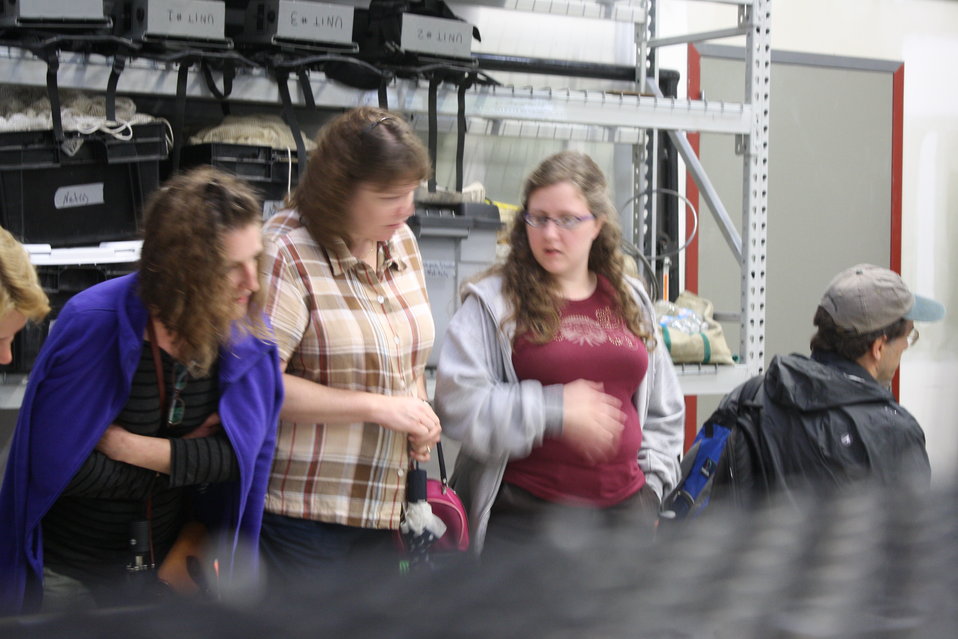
Nashua National Fish Hatchery welcomes regional office employees

Viewing the Hatchery.